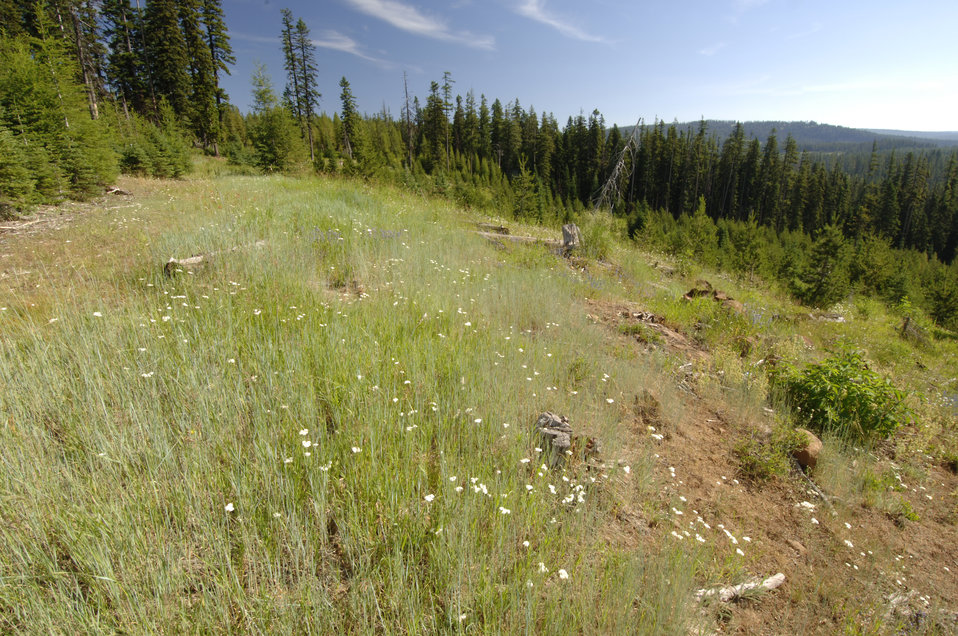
The U.S. Department of Agriculture (USDA) Forest Service (FS) is strongly committed to the management of the National Forests in an environmentally sound manner. The agency's top priority is to maintain and improve the health, diversity, and productivity of forest ecosystems for the enjoyment of current and future generations. Forest management includes guidance, administration, and support of the agency's forest products management and sales programs. Forest products include materials derived from a forest for commercial use such as lumber and paper, and also 'special forest products' such as medicinal herbs, fungi, edible fruits and nuts, and other natural products. This photo was taken at the Umatilla National Forest in Oregon on July 10, 2007.